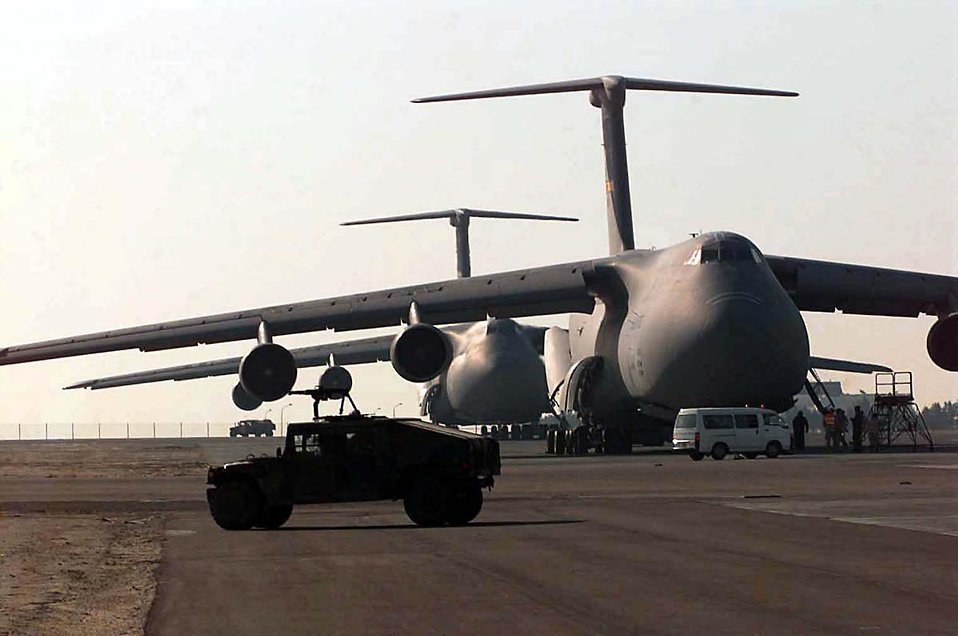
Twin Galaxies

SOUTHWEST ASIA -- A C-5 Galaxy from Dover Air Force Base, Del., and another from Travis AFB, Calif., stand ready in Southwest Asia Feb. 19. Approximately 500 people have deployed from Travis and 30 from Dover. Both wings are utilizing nearly every aircraft as part of a rotation into Southwest Asia.